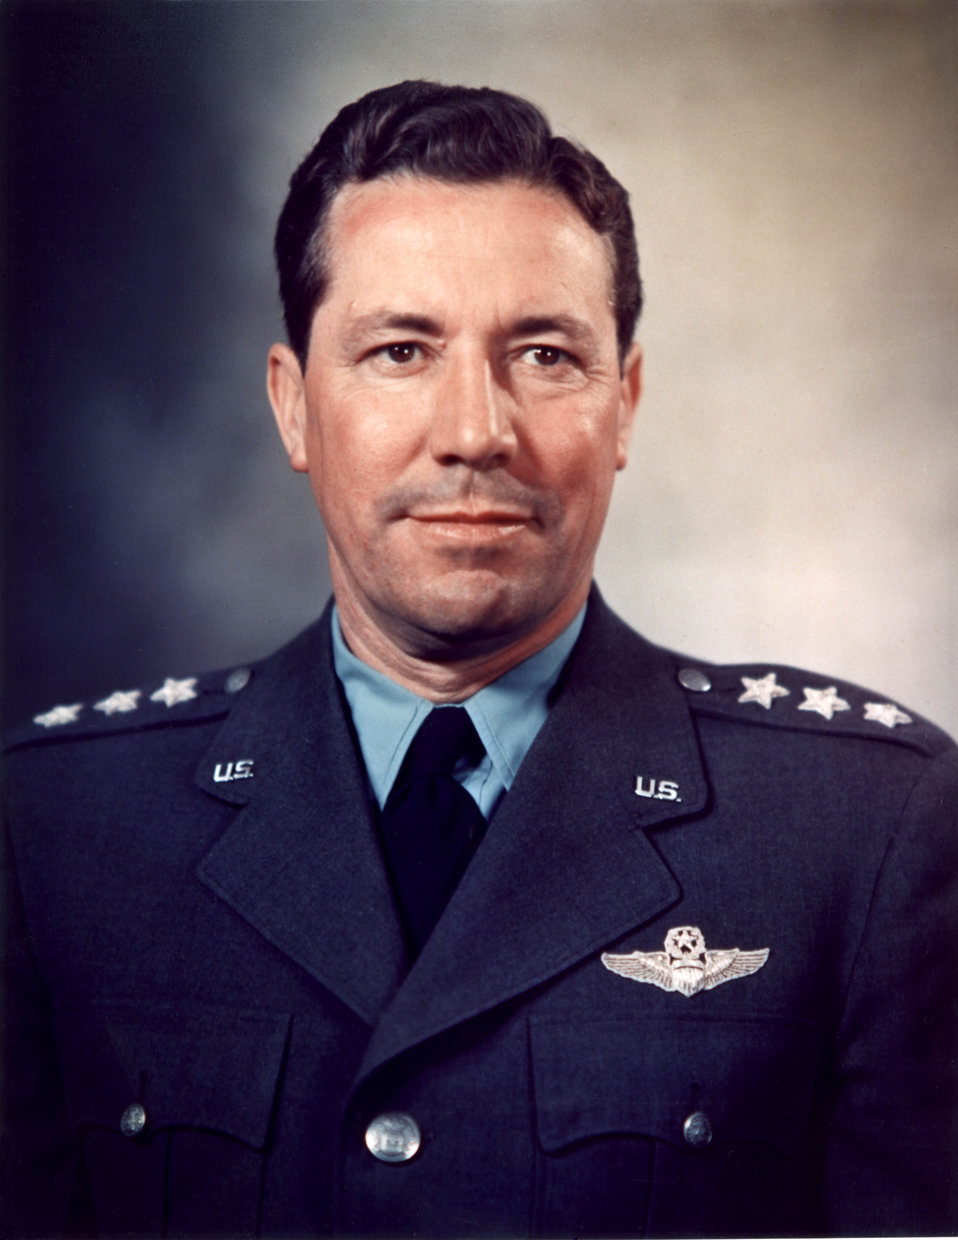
Elwood R. Quesada

1940's -- Elwood R. Quesada went to Tampa, Fla., as commanding general of the Third Air Force on March 1, 1946. This group soon became Tactical Air Command. As head of TAC he was promoted to lieutenant general in October 1947 and in November 1948 became special assistant for reserve forces at Headquarters U.S. Air Force.